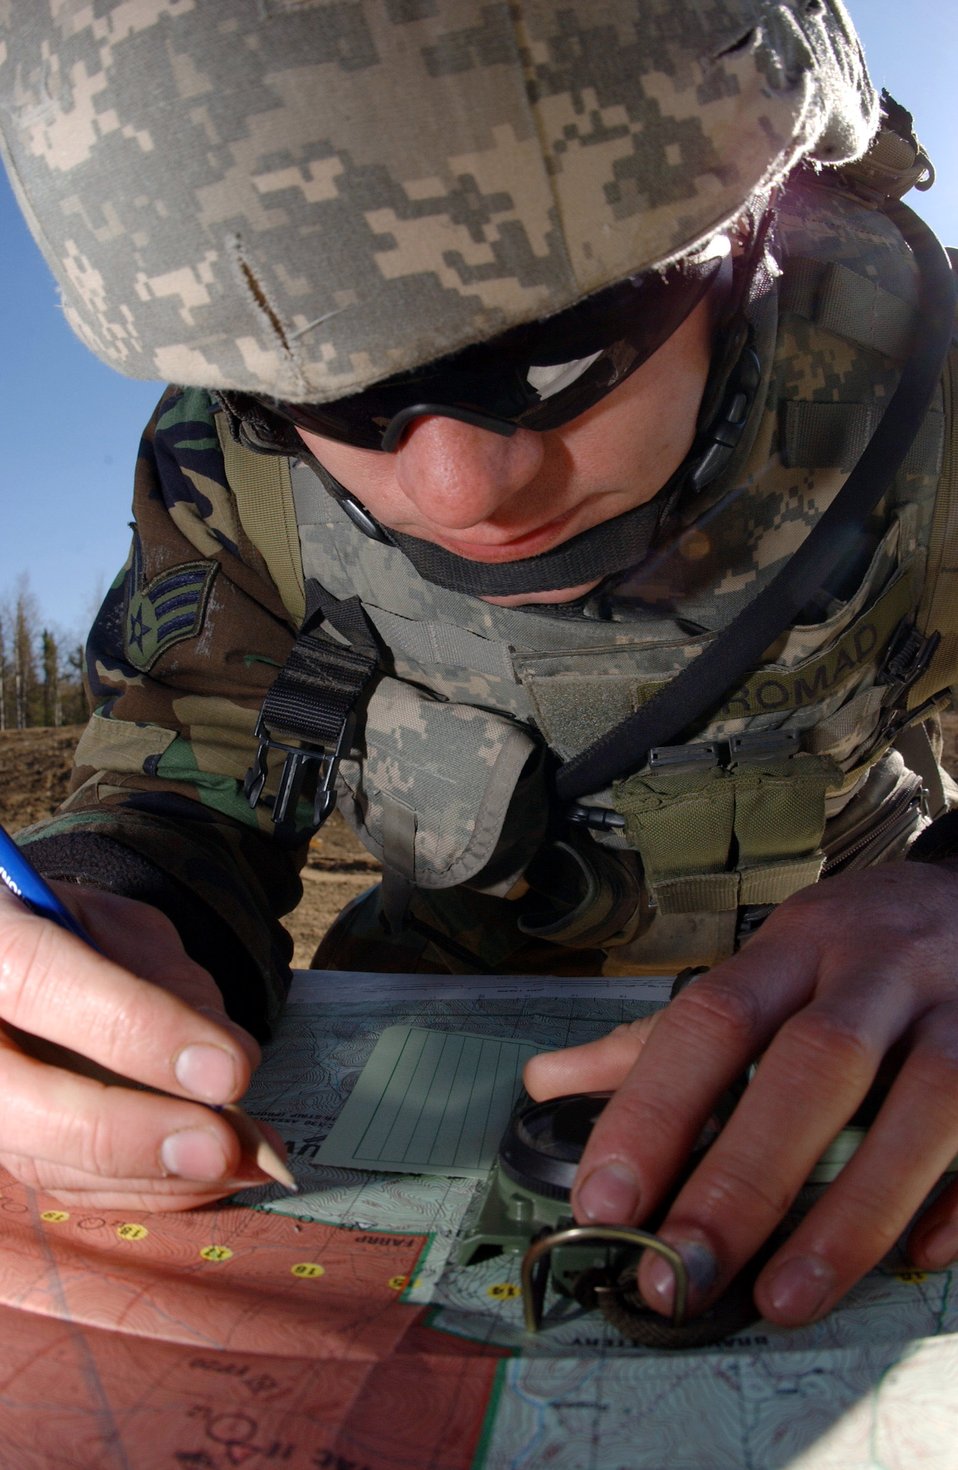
Practice makes perfect during Ursa Minor

Senior Airman John Tranum uses a map and compass to plan his course for the vehicle navigation exercise during Operation Ursa Minor May 16 on the Pacific Alaska Range Complex at Eielson Air Force Base, Alaska. He is a tactical air control party Airman assigned to the 3rd Air Support Operations Squadron, which equips and maintains mission-ready air liaison, terminal attack control, and weather observation/forecasting people to support the U.S. Army Alaska 1st Stryker Brigade Combat Team.